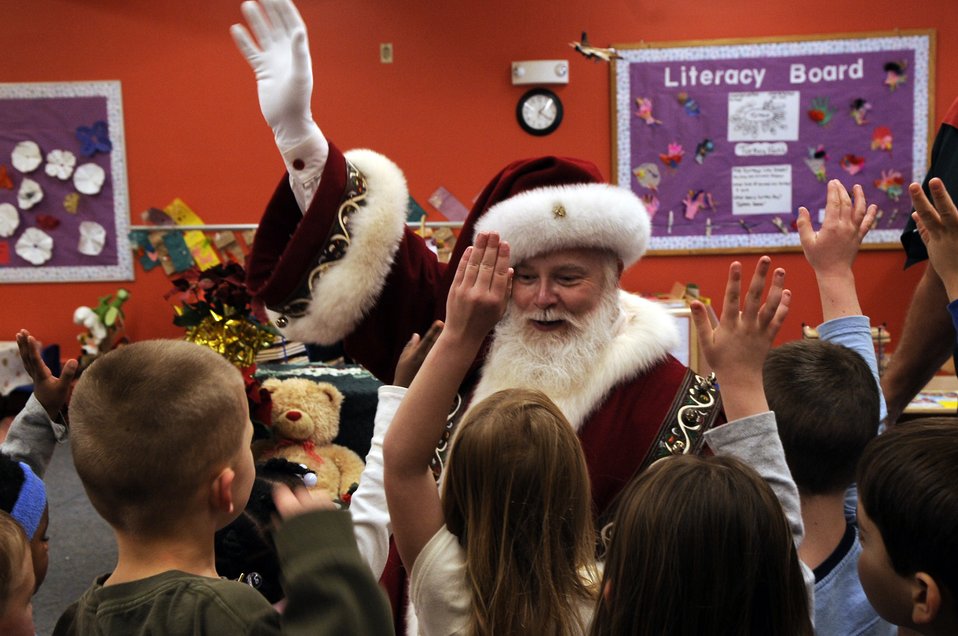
Santa Claus is coming to town

Santa Claus tells children to raise their hand if they have been a good boy or girl during a surprise visit to a child development center Dec. 23 at Peterson Air Force Base, Colo.